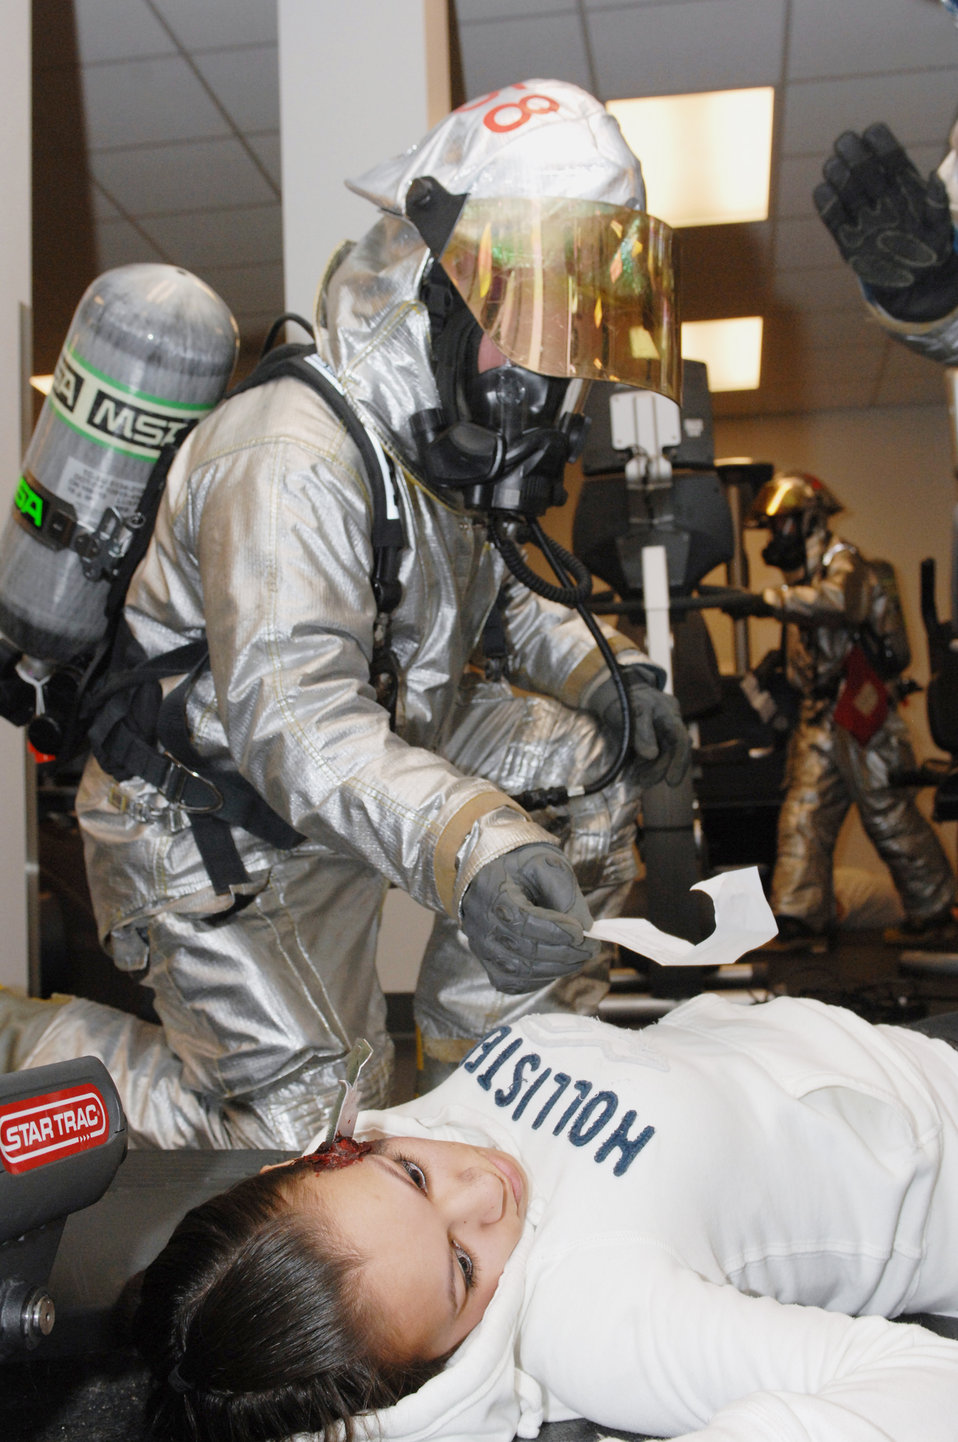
Shooter, sirens prep Minot Airmen

A base firefighter assists simulated victim Airman 1st Class Summer Mancilla during a major accident response exercise March 26, 2010, at Minot Air Force Base, N.D. The exercise prepared base members for possible real-world situations as well as testing communication and emergency procedures. Airman Mancilla is a 5th Maintenance Operations Squadron scheduler.